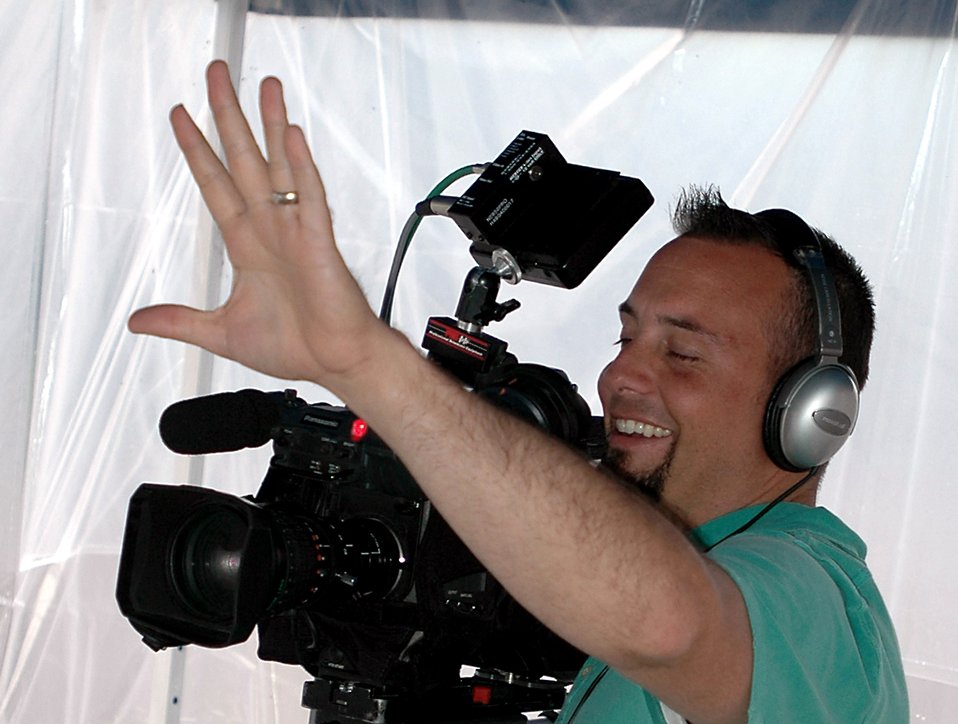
Holiday greetings program producing more than 7,000 'Hi moms'

Kris Grogan gives a five-second countdown for the Stark family at Aviano Air Base, Italy, who are taping a holiday greetings for family and friends back in the U.S. An Army and Air Force Hometown News